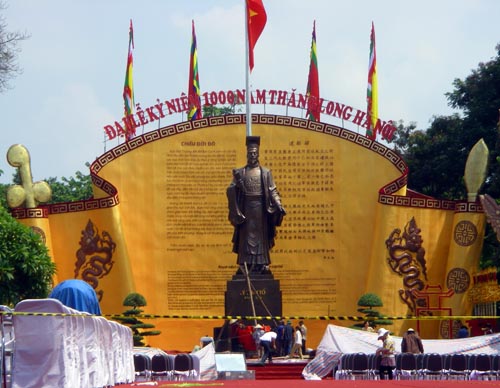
Hanoi celebrates 1,000 years as capital of Vietnam.